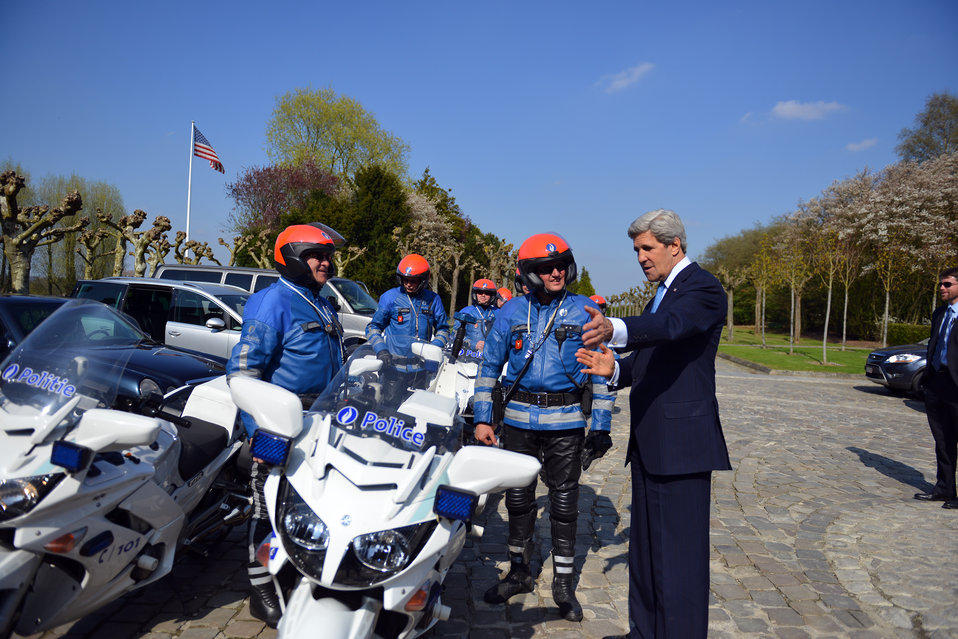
Secretary Kerry Chats With Belgian Police Officers

U.S. Secretary of State John Kerry chats with Belgian police officers in Brussels, Belgium, on April 24, 2013.